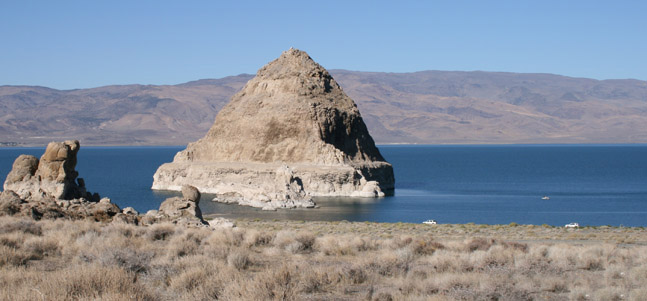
Anaho Island National Wildlife Refuge

Anaho Island Refuge is a rocky island that rises from the waters of Pyramid Lake in Washoe County, Nevada.

The refuge was established for the benefit and protection of colonial nesting species and other migratory birds. It supports breeding colonies of American white pelicans, double-crested cormorants, California gulls, Caspian terns, great blue herons, black-crowned night-herons, and snowy egrets. The pelican colony is one of the two largest in the western United States.

Anaho Island Refuge is closed to public access to protect colonial nesting birds, and boating is also prohibited within 500 feet of the island. The refuge is visible from any point along Pyramid Lake.